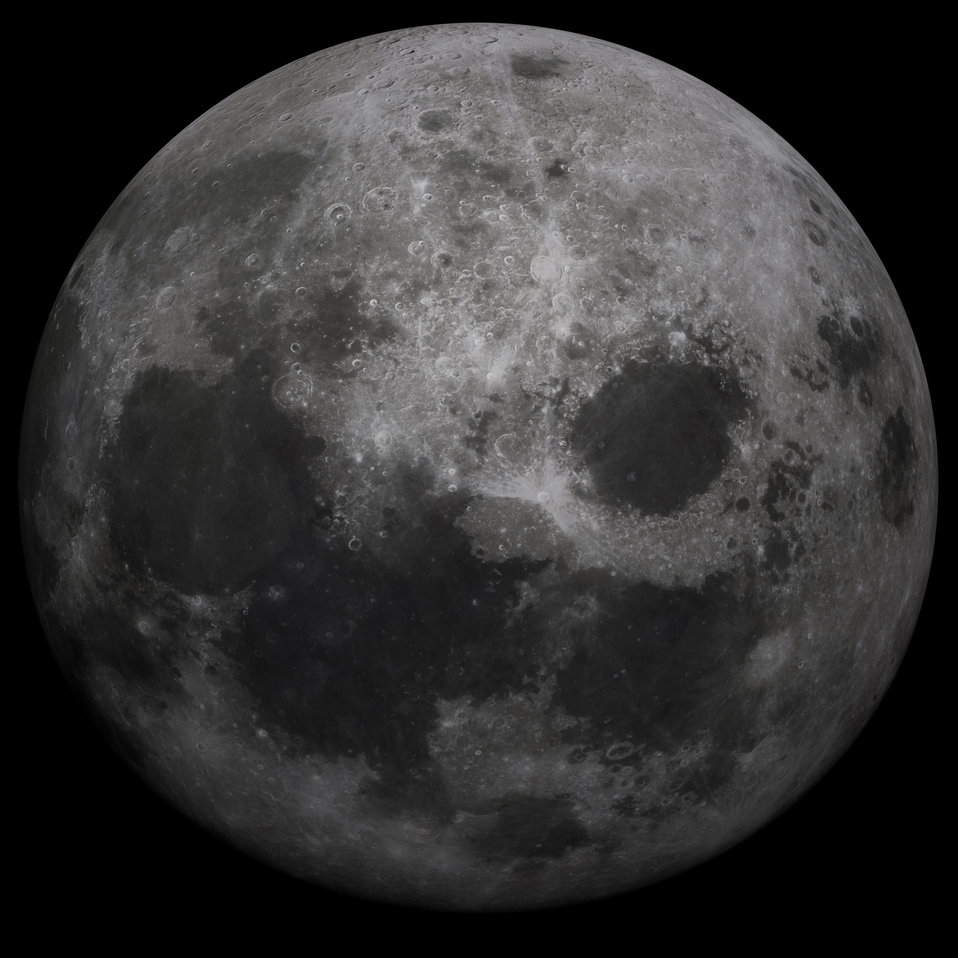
Moon in high resolution

View from space to the moon in high resolution.